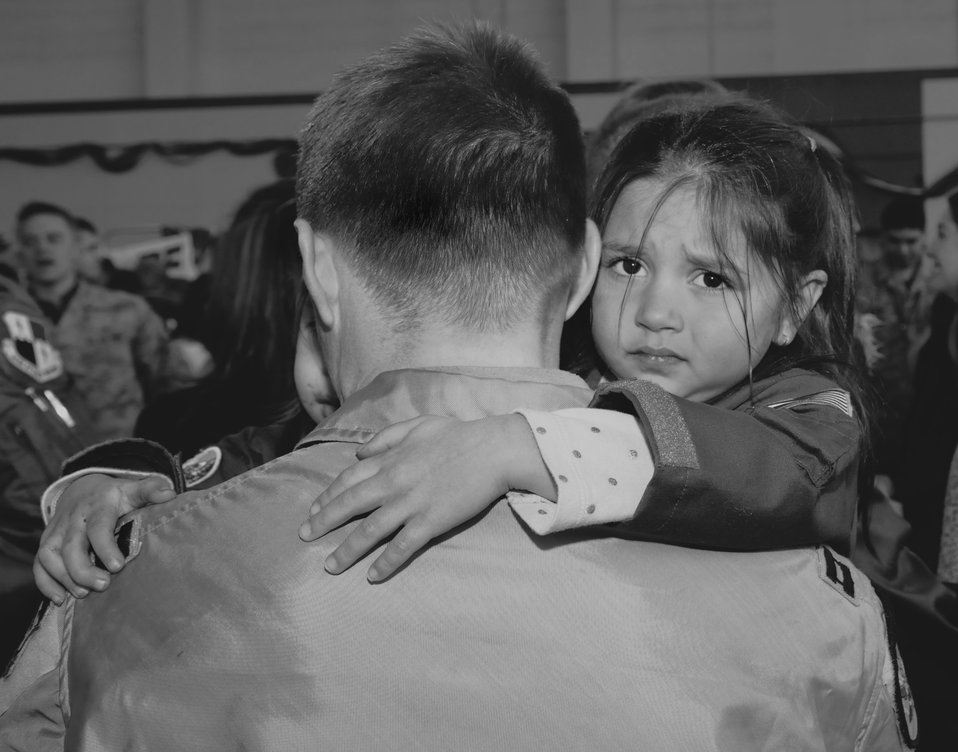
Spangdahlem team returns home

Capt. Jeremy Wiggins hugs his daughers Nicole (hidden) and Kaitelyn at the celebration for returning Airmen Feb. 5, 2010, at Spangdahlem Air Base, Germany. Captain Wiggins along with other members of the 23rd Fighter Squadron deployed to Joint Base Balad, Iraq, in support of Operation Iraqi Freedom.